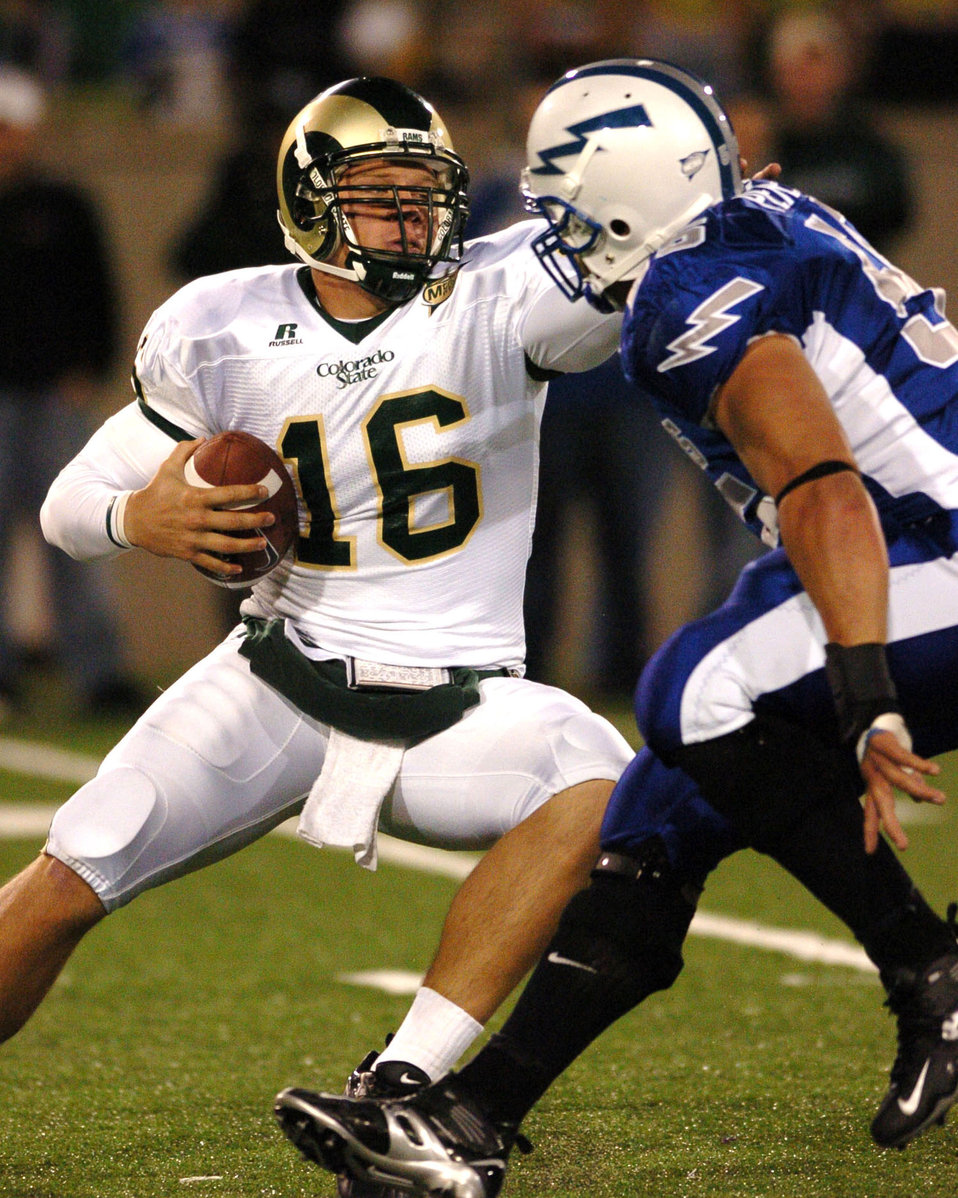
Pocket Scramble

Colorado State quarterback Caleb Hanie avoids a sack by Air Force defensive end Gilberto Perez Thursday night before scrambling out of the pocket for a short gain. Despite leading Air Force 21-3 at halftime, CSU was unable to prevent 21 unanswered points from Air Force in the second half. Air Force won, 24-21.